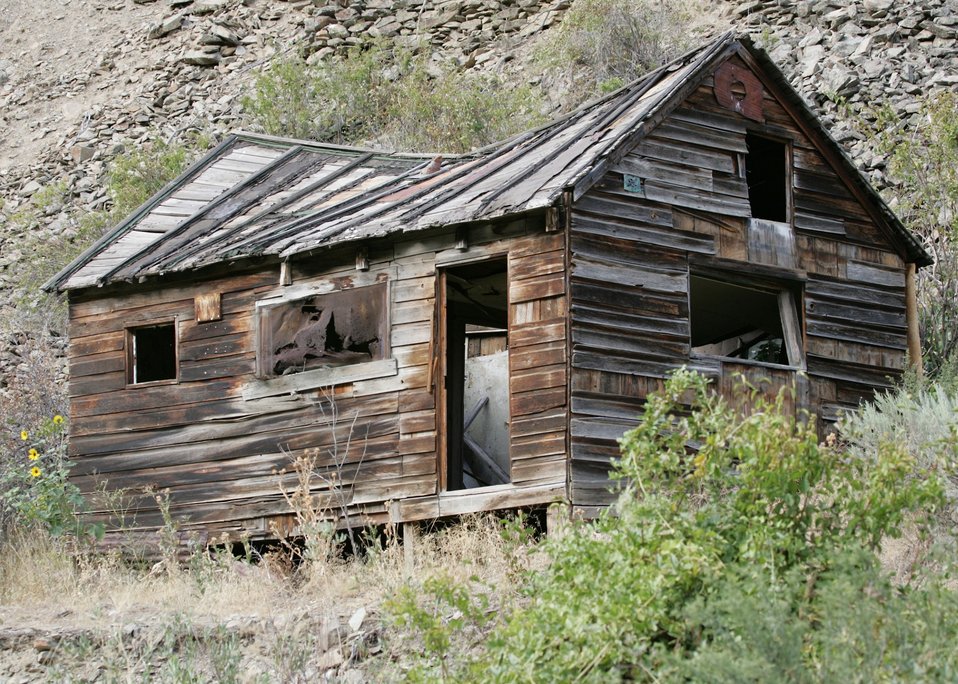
Historic mining cabin on Connor Creek in eastern Oregon.